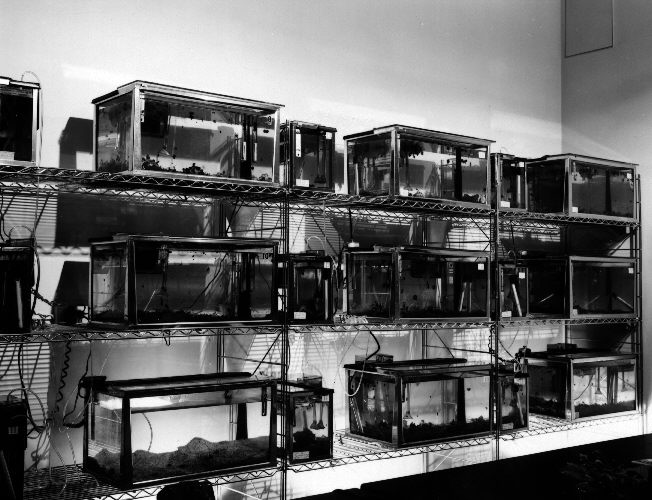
Snail Room, CDC Animal Quarters